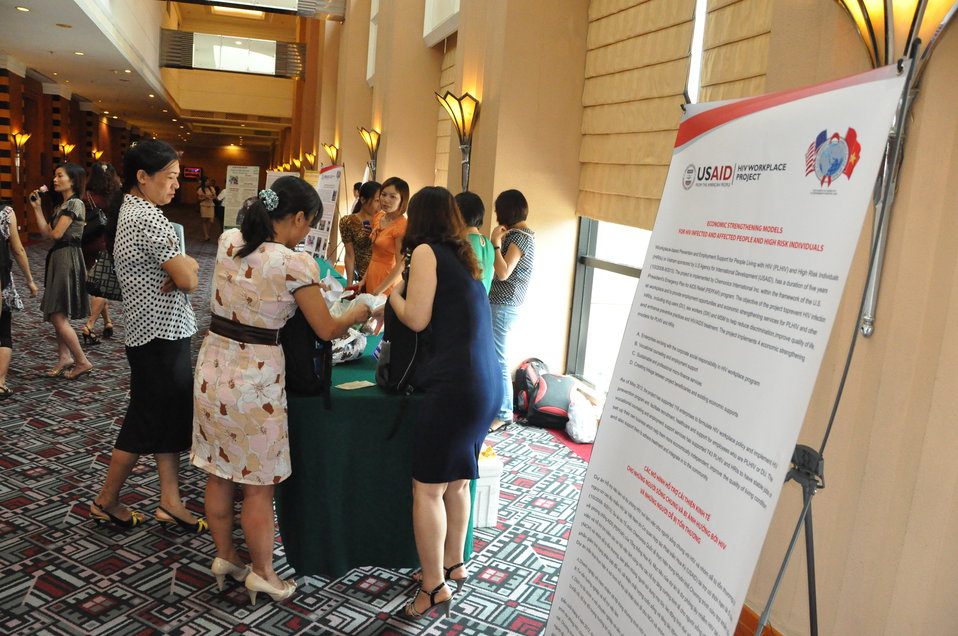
Microfinance Plan for People at Risk or Affected by HIV Found Sustainable

USAID supported a pilot model for microfinance, including credit, savings and insurance, for people living with or affected by HIV or those at high risk of becoming infected. After one year, the model has been found to be successful, replicable, and sustainable.